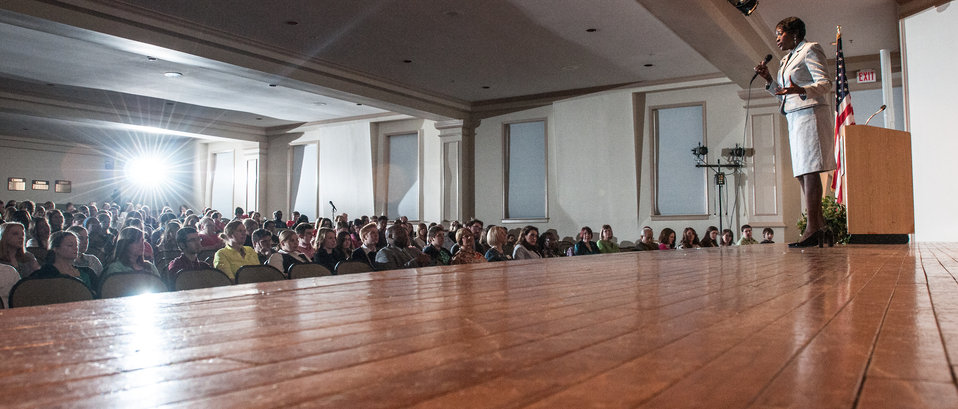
U.S. Department of Agriculture (USDA) Departmental Management Office of Advocacy and Outreach Director Carolyn Parker provided opening remarks to approximately 300 youth members, Extension Educators and 4-H Adult Volunteers from across the nation, as well as U.S. Territories at the 2013 National 4-H Conference, on Monday, April 8, 2013 in Chevy Chase, MD. National Institute of Food and Agriculture Director Dr. Sonny Ramaswamy provide additional remarks and Secretary Tom Vilsack will deliver the keynote address. The youth delegates are in grades 10-12 (15-19 years old). The purpose of the conference is to 1) engage 4-H youth in personal development experiences that will increase knowledge, resources, and skills; 2) discuss topics affecting youth and 4-H programming nationwide; and 3) empower and mobilize 4-H youth to create positive social change in their communities in a meaningful and genuine way. The conference also reinforces the rich history of 4-H and its valuable tie to USDA, Cooperative Extension and the Land-Grant University System.